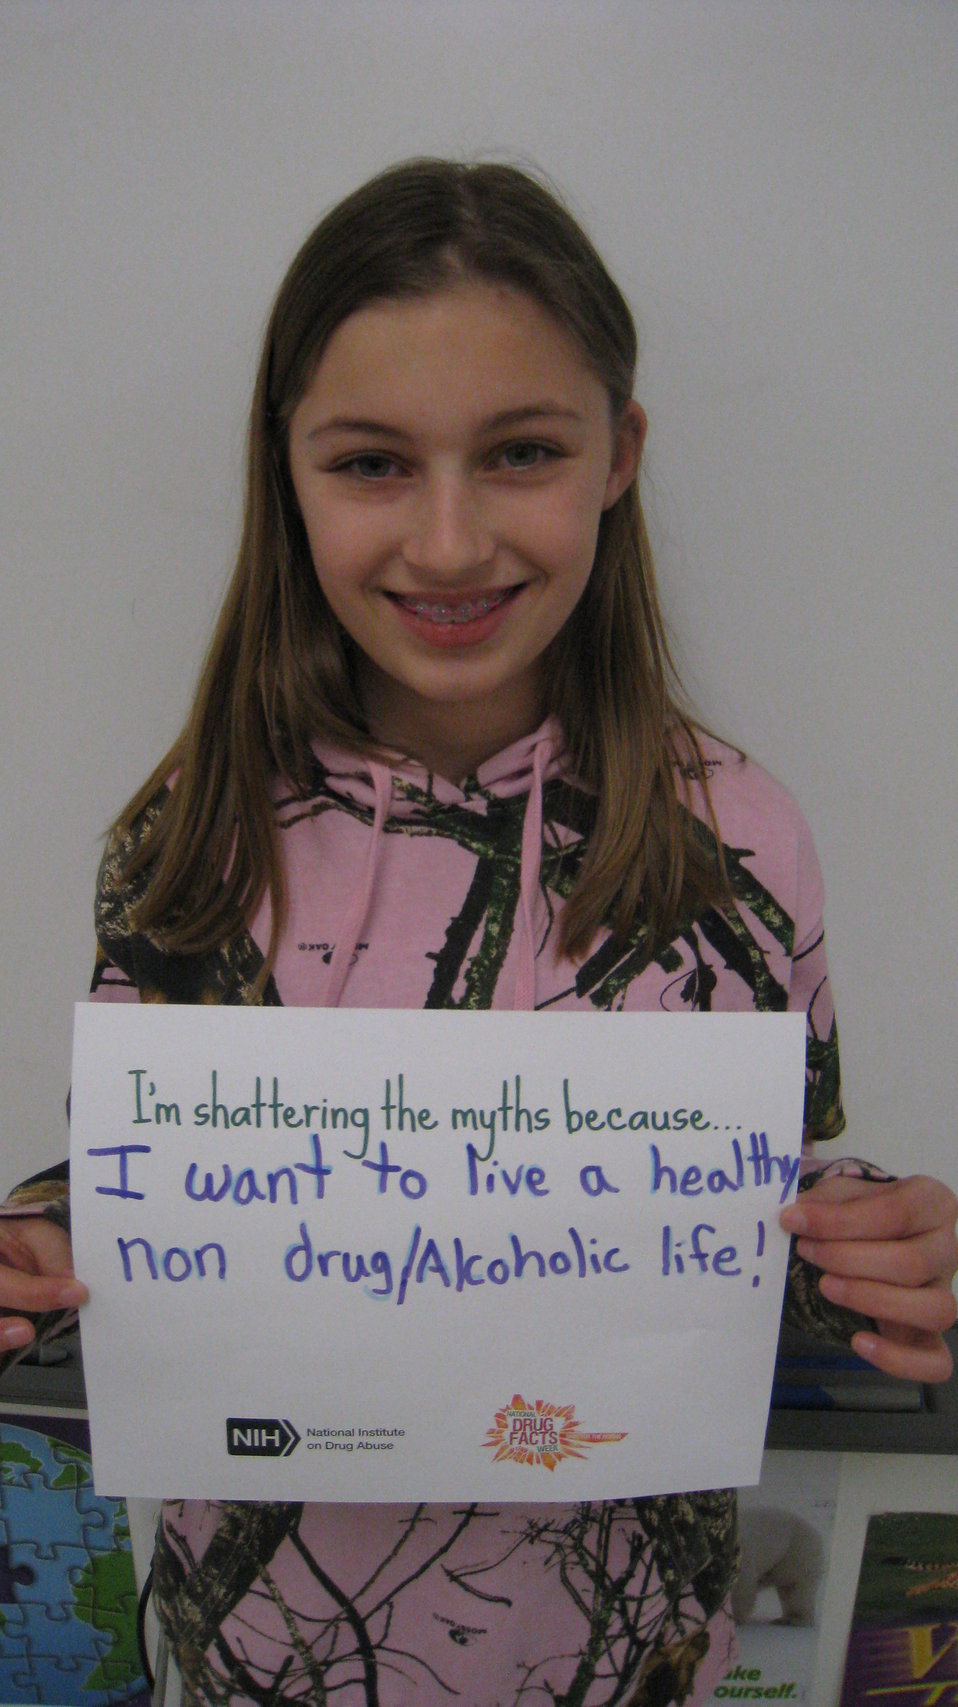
I'm Shattering the Myths Because...

Teenagers from the Van Buren County SAFE Coalition's, Youth Leadership Council (YLC) in Keosauqua, Iowa participate in various events during National Drug Facts Week, 2014.